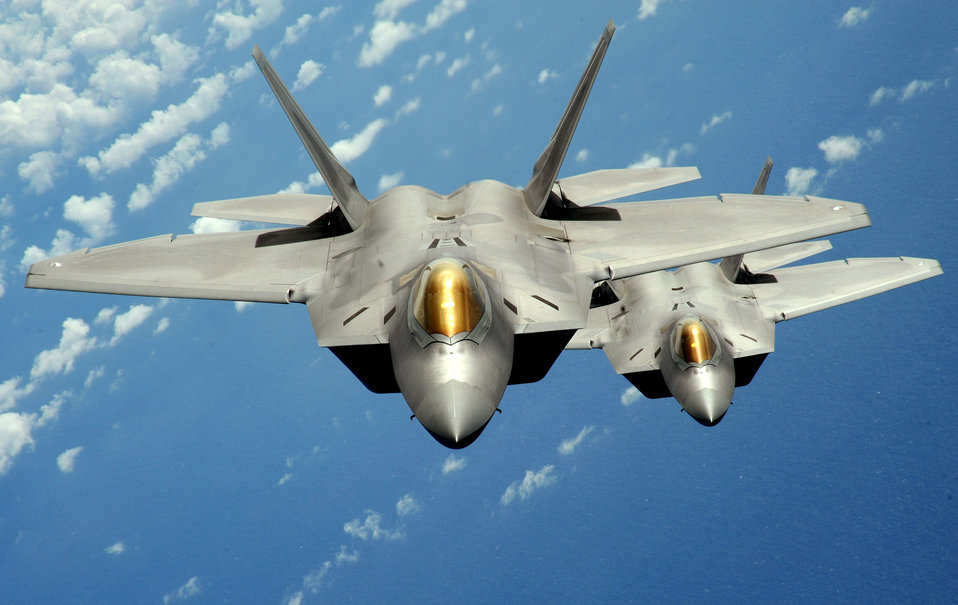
First deployed PMP

Members of the 27th Expeditionary Aircraft Maintenance Unit completed the first accelerated packaged maintenance plan on an F-22 Raptor in a deployed environment Aug. 4, 2010, at Andersen Air Force Base, Guam. The unit had 10 days to complete a process that normally takes up to a month.